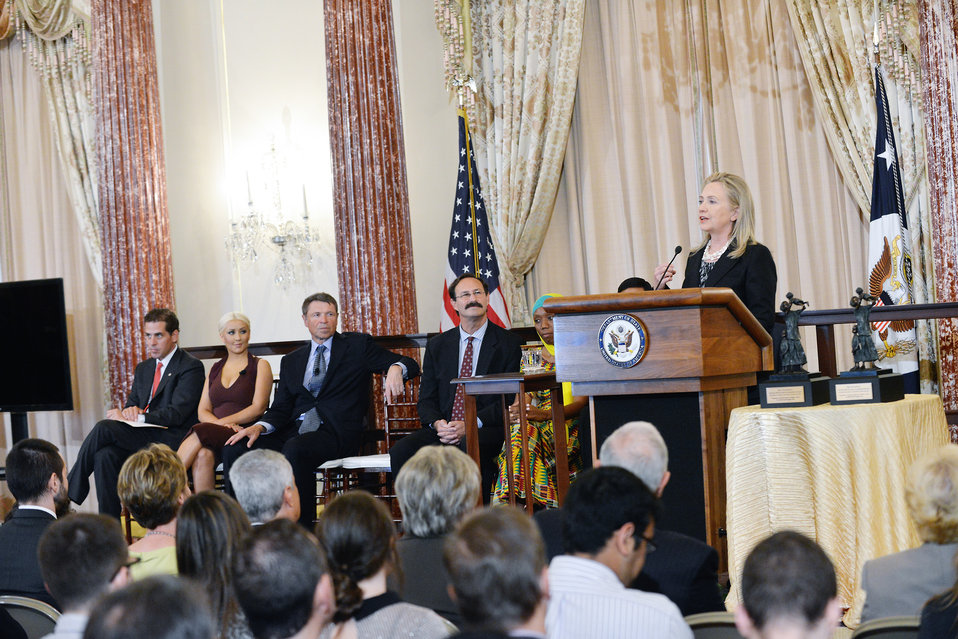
Secretary Clinton Delivers Remarks at the World Food Program-USA Awards Ceremony

U.S. Secretary of State Hillary Rodham Clinton delivers remarks at the World Food Program-USA Awards Ceremony at the U.S. Department of State in Washington, D.C., October 3, 2012.